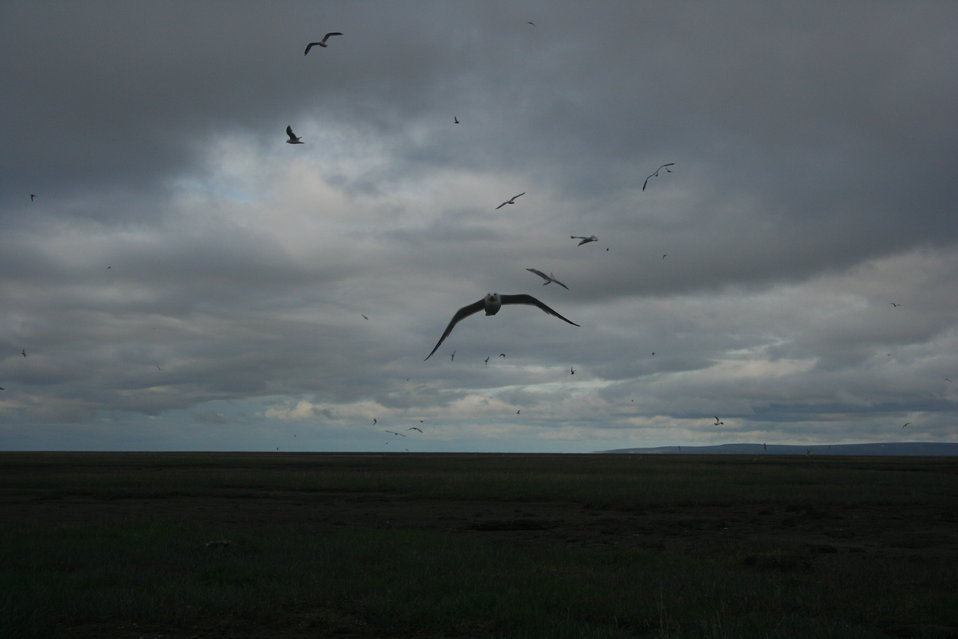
Gull activity

USFWS Yukon Delta NWR
This is a typcial scene that can play out if/when a gull colony is disturbed.